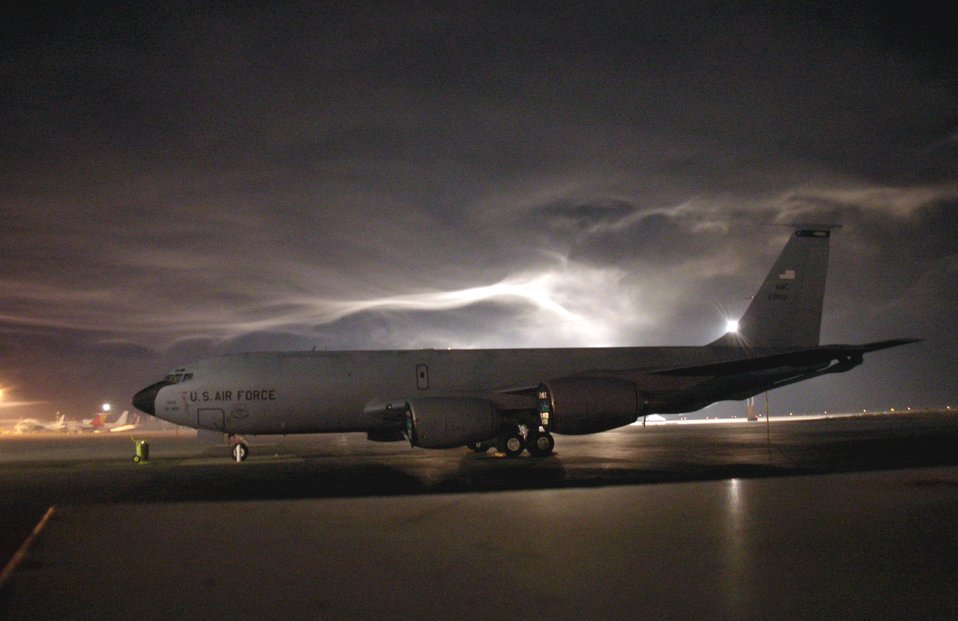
In any weather

A KC-135 Stratotanker sits on the flightline at Manas Air Base, Kyrgyzstan, Thursday, Feb. 23, 2006. Ground crews will have to de-ice the tanker before it can take off on a refueling mission.